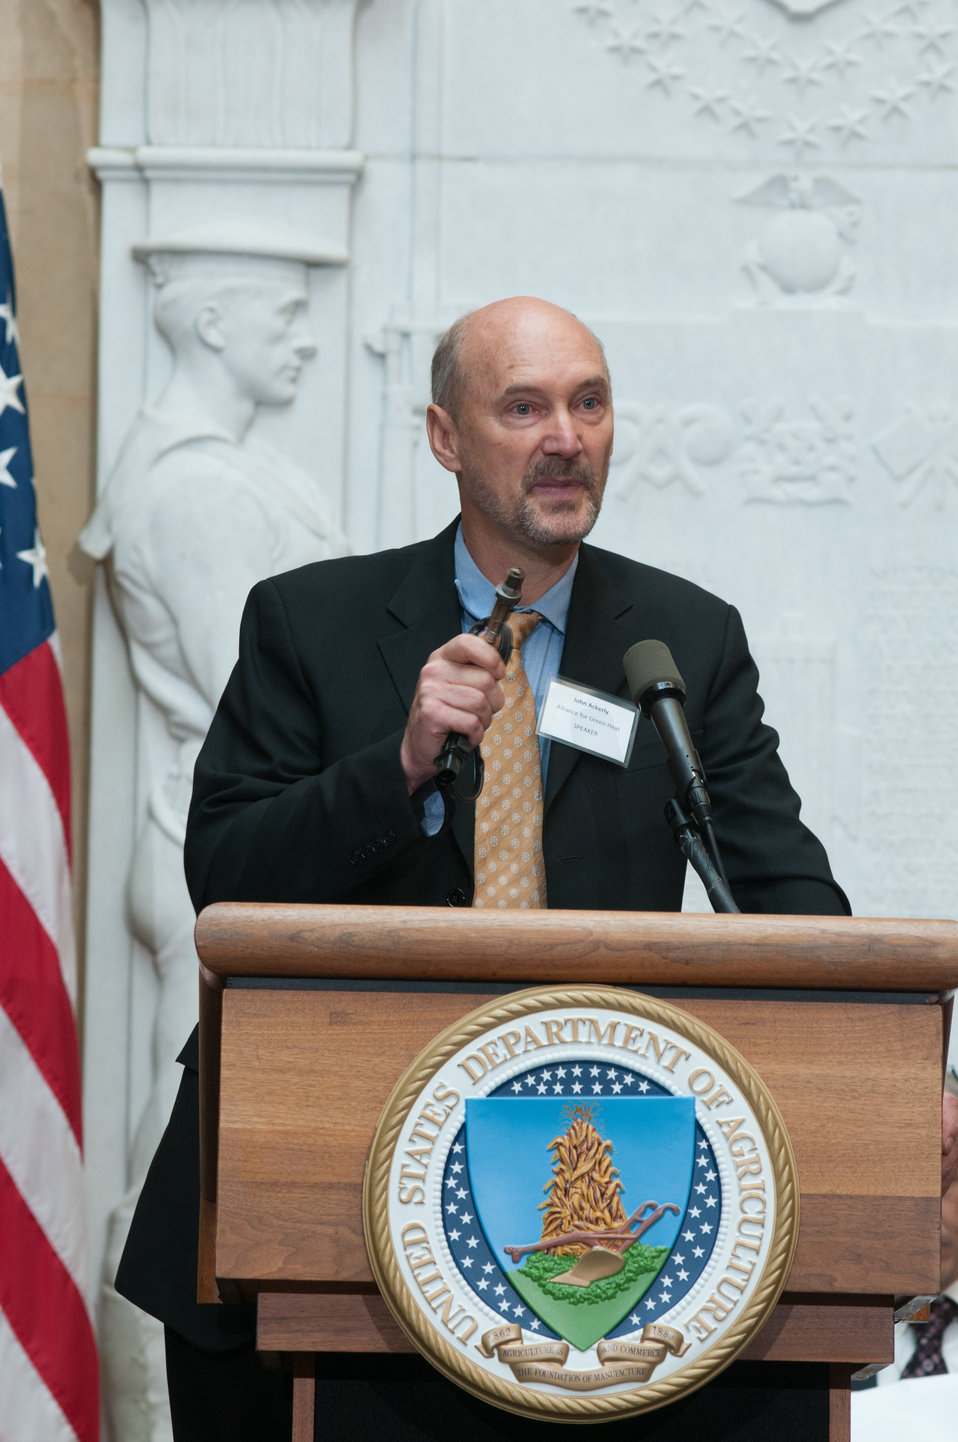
Alliance for Green Heat, President John Ackerly, speaks during the U.S. Department of Agriculture (USDA) Wood Energy Memorandum of Understanding, and awarded wood energy grants announcements event, at the USDA Headquarters, in Washington, D.C., on Wednesday, September 11, 2013. Signing the MOU are partnership leaders Biomass Thermal Energy Council, Executive Director Joseph Seymour; Alliance for Green Heat, President John Ackerly, USDA Agriculture Deputy Secretary Krysta Harden; Pellet Fuels Institute Executive, Director Jennifer Hedrick; Biomass Power Association, President and CEO Bob Cleaves, and Secretary Thomas Vilsack who signed it earlier. Moderating the event is Under Secretary for Rural Development Doug O’Brien.
The partnership agreement focuses on promoting wood energy nationwide as a means to address fire risks, bolster rural economic development, improve air quality, and help meet the Obama Administration’s renewable energy and energy efficiency goals. These organizations support the use of wood energy across the scale of users – from residential users, to commercial and intuitional facilities, to industrial production of heat and or electricity to drive businesses and feed the electrical grid.
Under the terms of the five grants announced by Deputy Secretary Harden, private, state and federal organizations will work together to stimulate the development of additional wood energy projects in their states. Collectively, $2.9 million will be spent o this effort -- $1.1 million on federal funds and $1.8 million in non federal funds. For more information o0n the cooperative agreement program, visit na.fs.fed.us.werc/wood-energy/ USDA Photo by Lance Cheung.